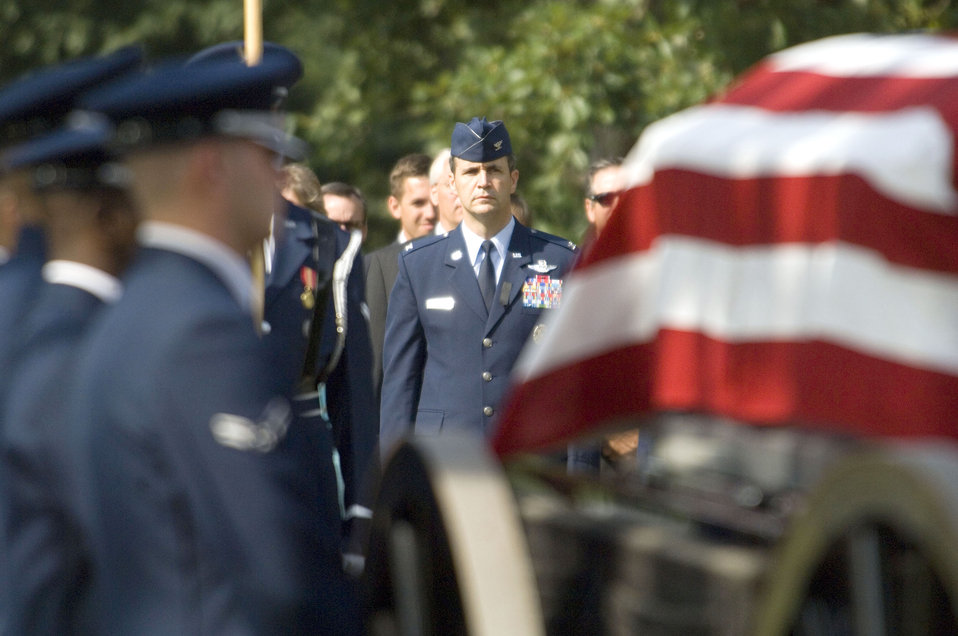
Military pays tribute to World War II bomber pilot

Col. John D. Posner walks behind the casket of his father, retired Maj. Gen. Jack I. Posner, at Arlington National Cemetery on Aug. 11. General Posner was among the last bomber pilots to have served in World War II.